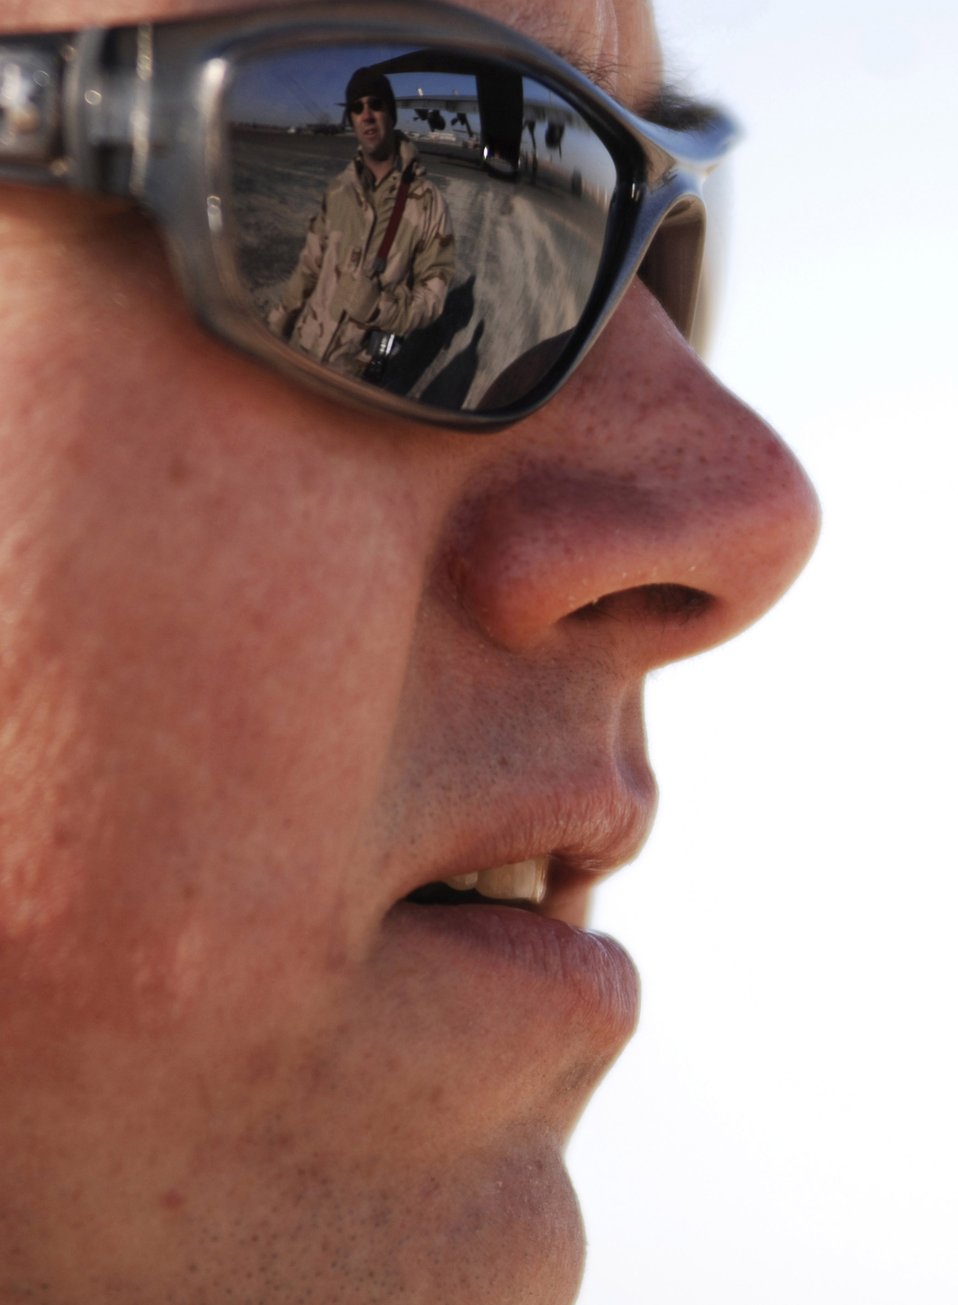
Airmen take Soldiers to the battlefield

Senior Airman Kenny Harmon talks with Staff Sgt. Shane Cronin prior to the takeoff of a C-130 Hercules mission Feb. 4 at a Southwest Asia air base. Airman Harmon is deployed in support of operations Enduring Freedom and Iraqi Freedom and a part of his duties as loadmaster is to ensure the safety of members on board the aircraft while being transported throughout the area of responsibility. Sergeant Harmon is a C-130 loadmaster deployed with the 737th Expeditionary Airlift Squadron and Sergeant Cronin is a 386th Air Expeditionary Wing public affairs broadcaster.